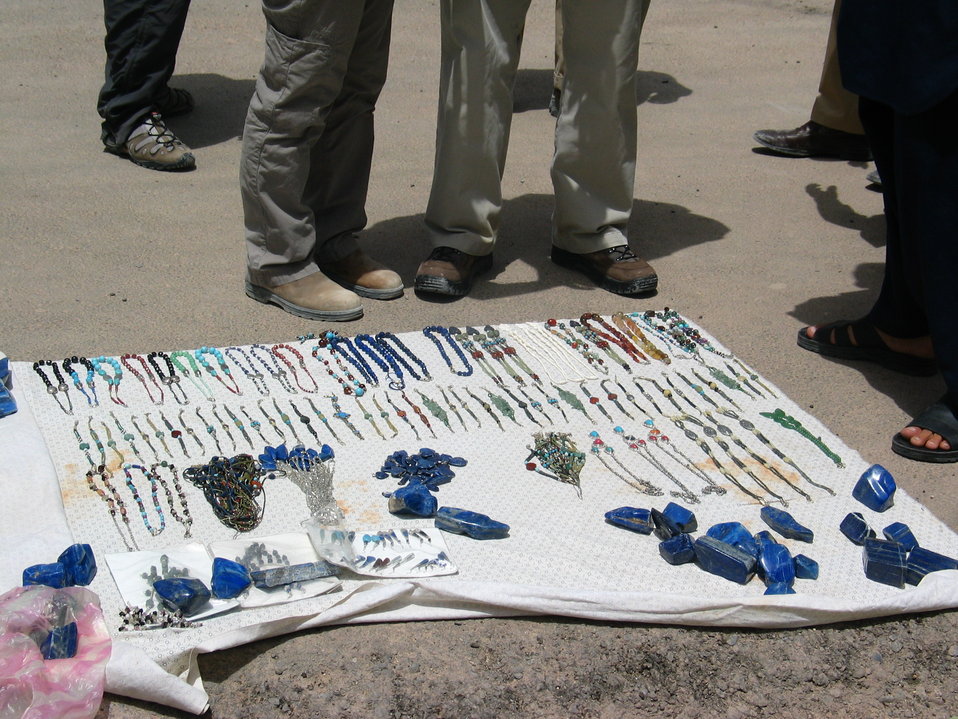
CODEL Berman